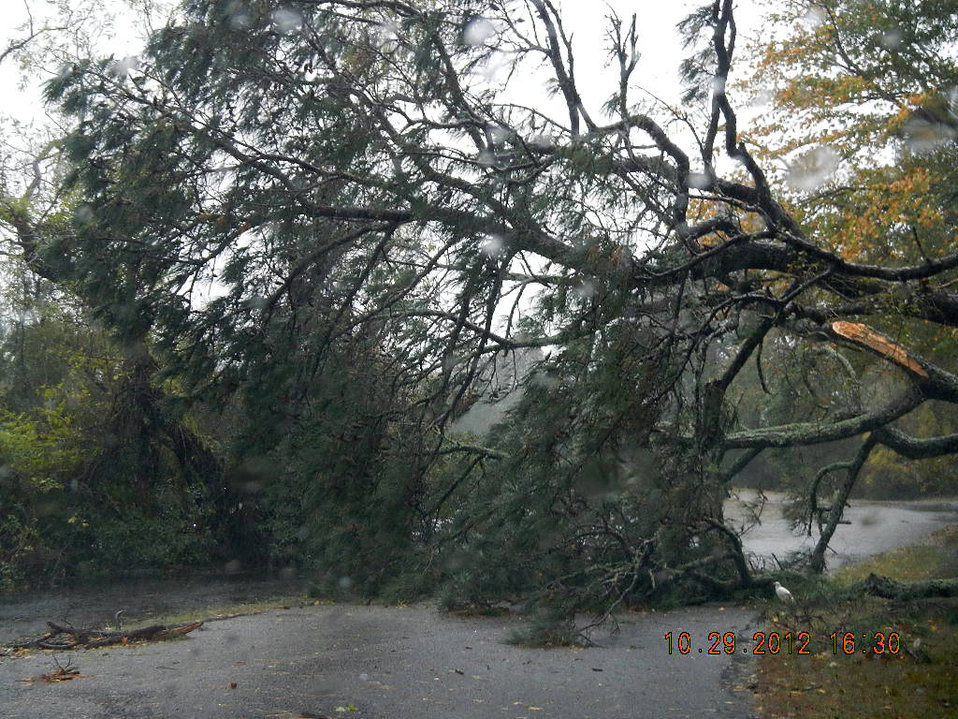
Hurricane Sandy hit Chincoteague National Wildlife Refuge (VA)

Fallen trees.